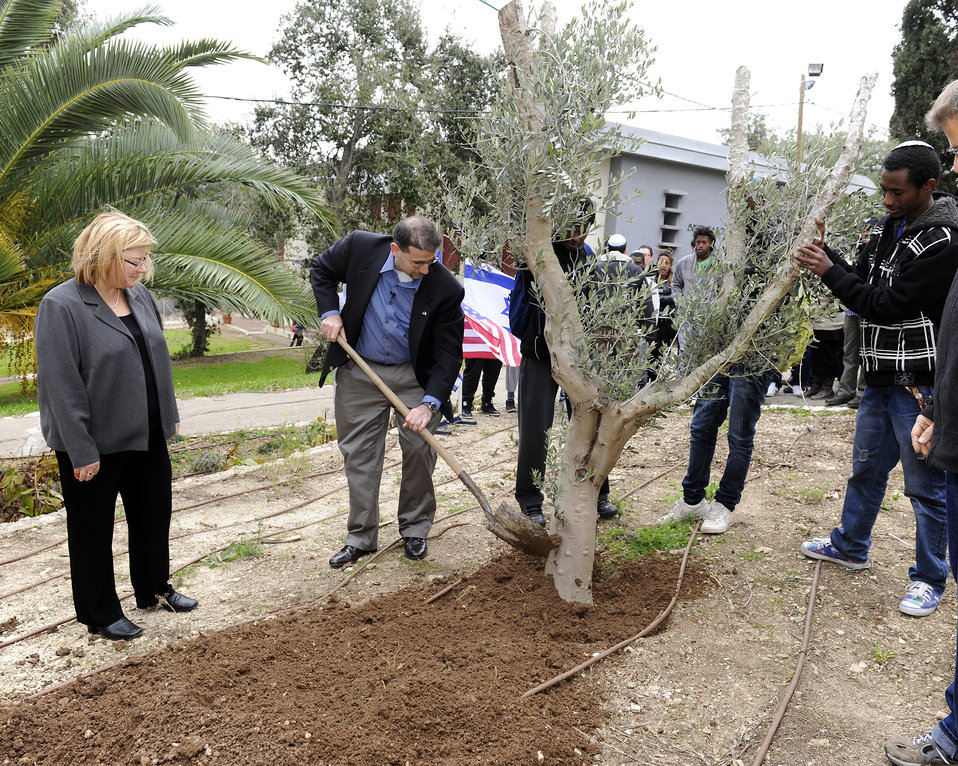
Ambassador Shapiro and Ms. Fisher Plant an Olive Tree

U.S. Ambassador to Israel Daniel Shapiro and his wife, Julie Fisher, plant an olive tree as a symbol of renewal and growth and America's deep-rooted friendship with Israel and to celebrate the eve of Tu b'shvat, Israel's Arbor day, at the Yemin Orde Youth Village, located in Nof HaCarmel, Israel, on February 7, 2012. The visit took place shortly after the one-year anniversary of the Carmel Forest Fire, December 2010, that nearly destroyed this Youth-at-Risk village.